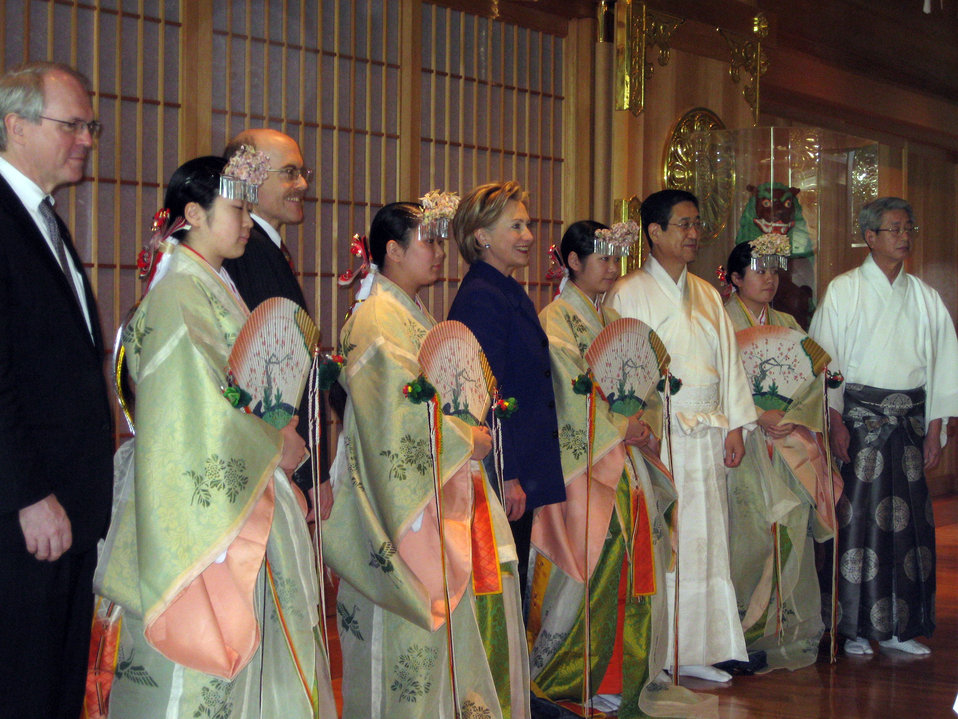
Meiji Shrine Ceremony

U.S. Secretary of State Hillary Clinton (center) visits the Meiji shrine in Shibuya, Tokyo, Japan February 17, 2009.